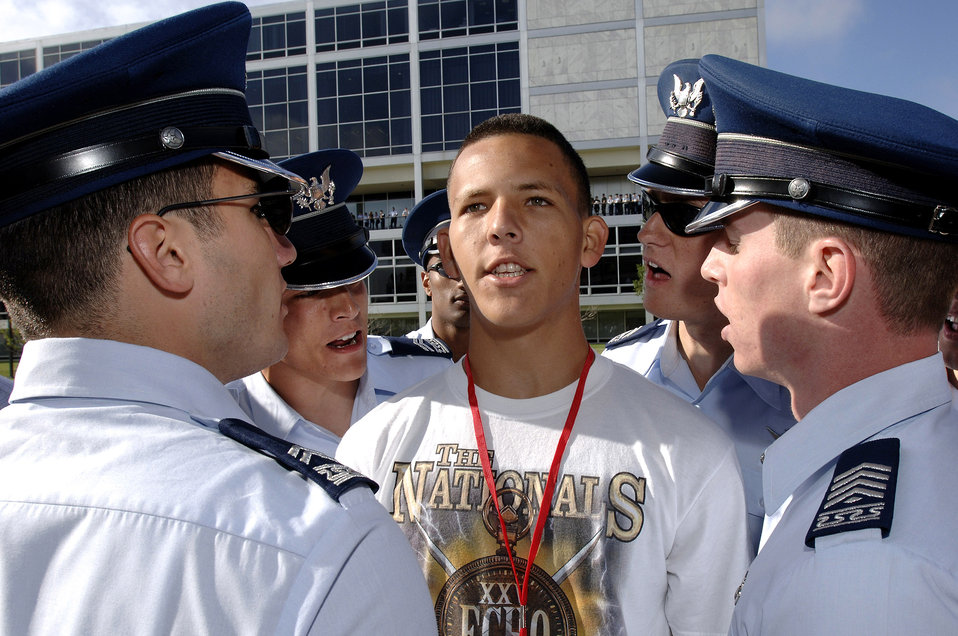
Welcome to the Academy

Basic cadet trainee Yunior Cruz receives motivational training from upper-class cadets during in-processing at the Air Force Academy for the Class of 2011. The 1,304 new cadets arrived June 28 to begin basic cadet training.